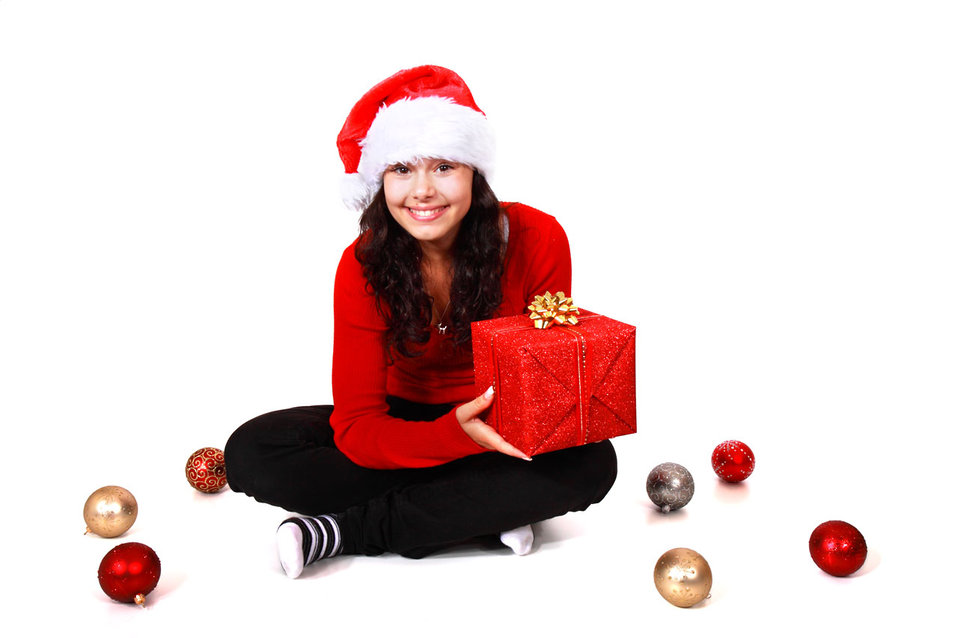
Christmas girl with gift

Young woman with christmas gift.